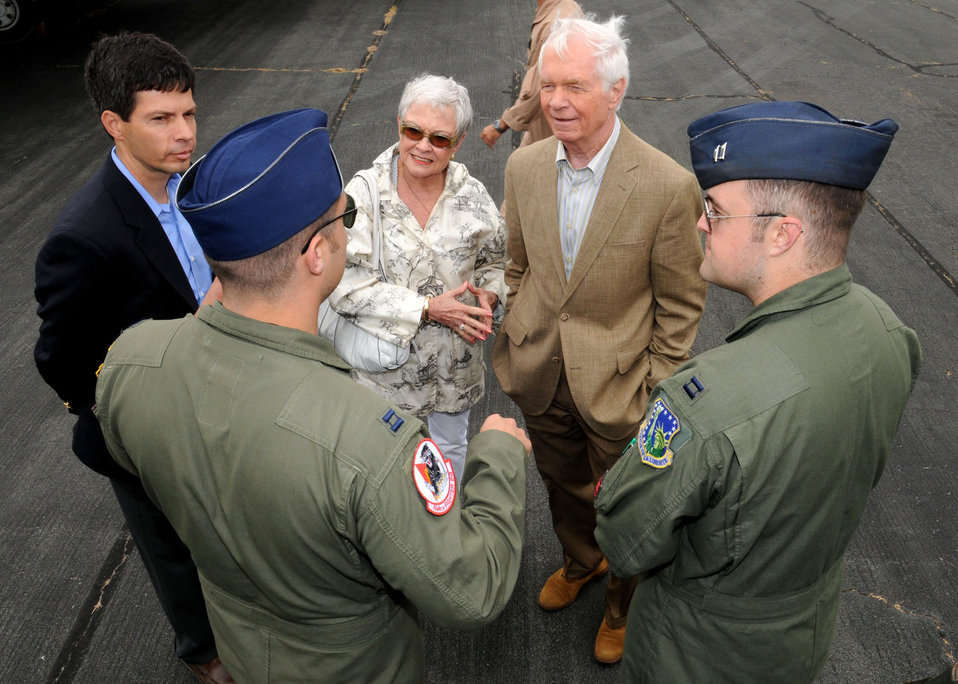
Farnborough International Air Show highlights servicemembers, aircraft

Mississippi Senator Thad Cochran and his wife, Rose, visit with Airmen July 19, 2010, during the Farnborough International Air Show in Farnborough, England. The world renowned air show exhibits the latest in aerospace equipment and technology.